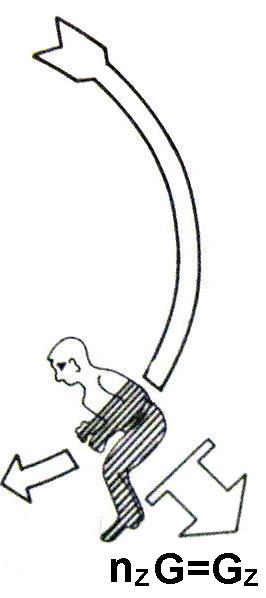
Српски / srpski: Сахара преузео Gz.jpg и прилагодио